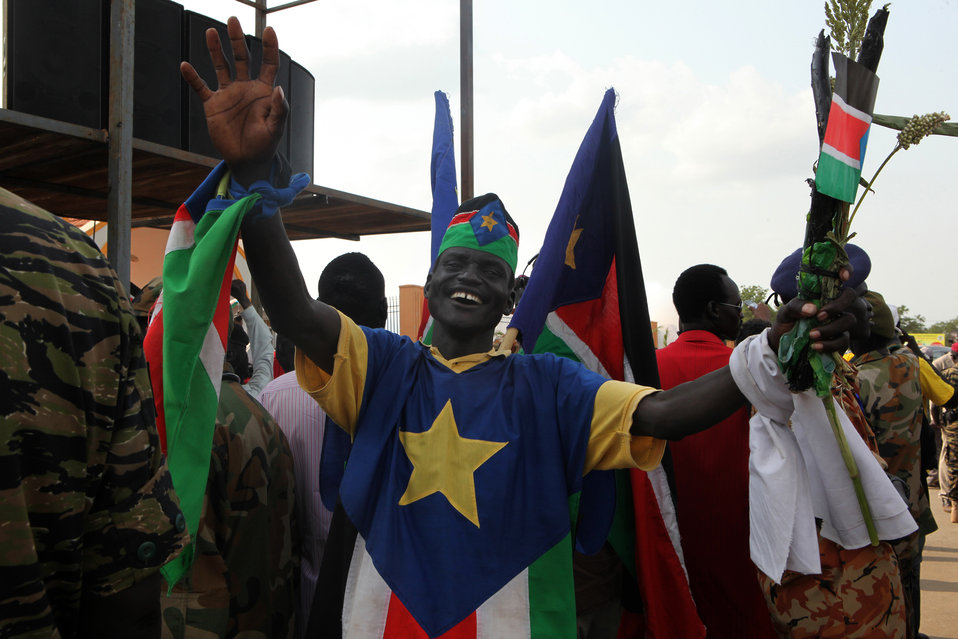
South Sudan Independence Day

Guests at the Republic of South Sudan Independence Day celebrations in Juba, South Sudan on July 9, 2011.